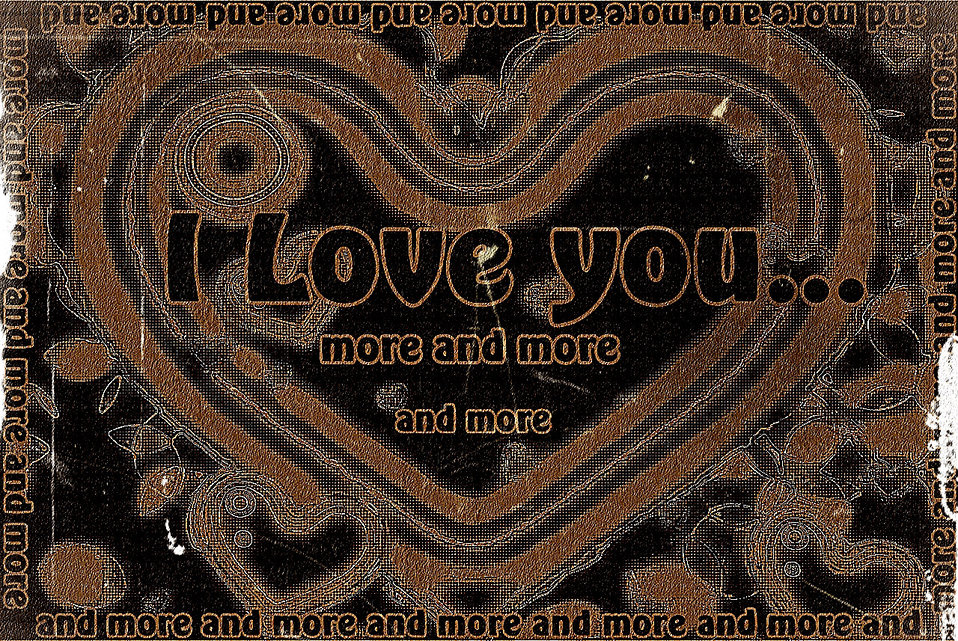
Antique heart

Declaration of love for a long time love.